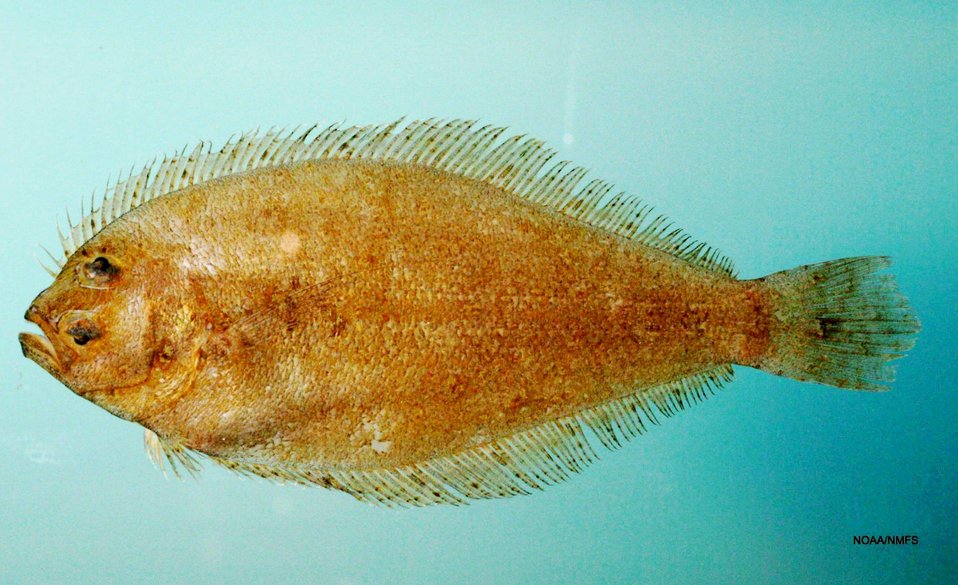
Dusky flounder ( Syacium papillosum )